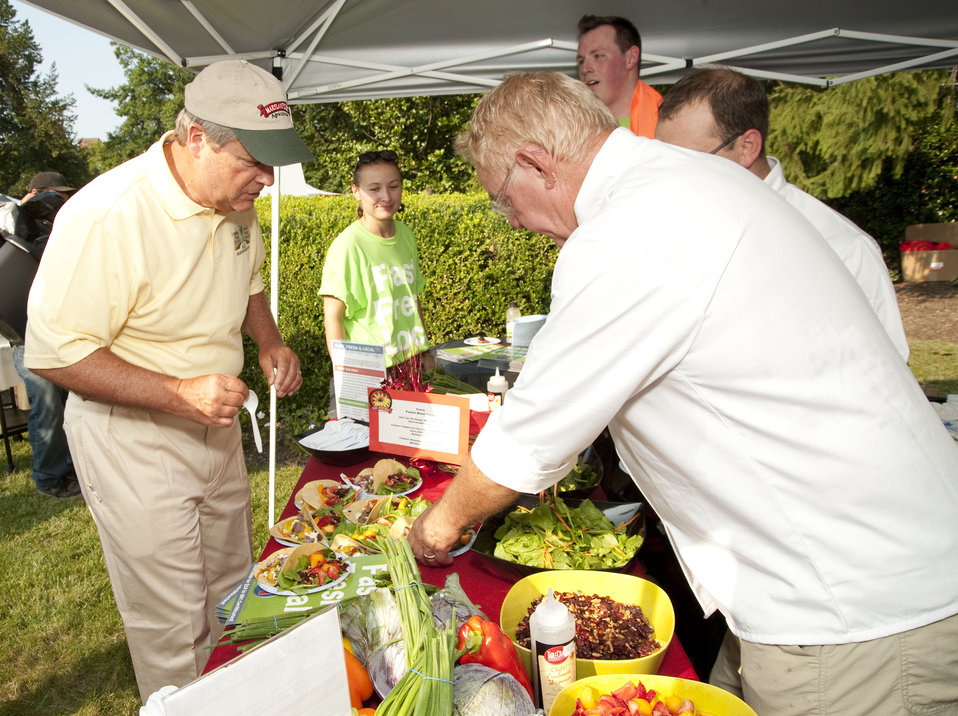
U.S. Department of Agriculture Secretary Tom Vilsack, Co-Host 4th Annual Maryland Buy Local Cookout, tries buffalo taco’s prepared by Chef Ype Von Hengst with Silver Diner in Rockville, MD, at the 4th Annual Buy Local cookout held in Annapolis MD, on Thursday, July 21, 2011.